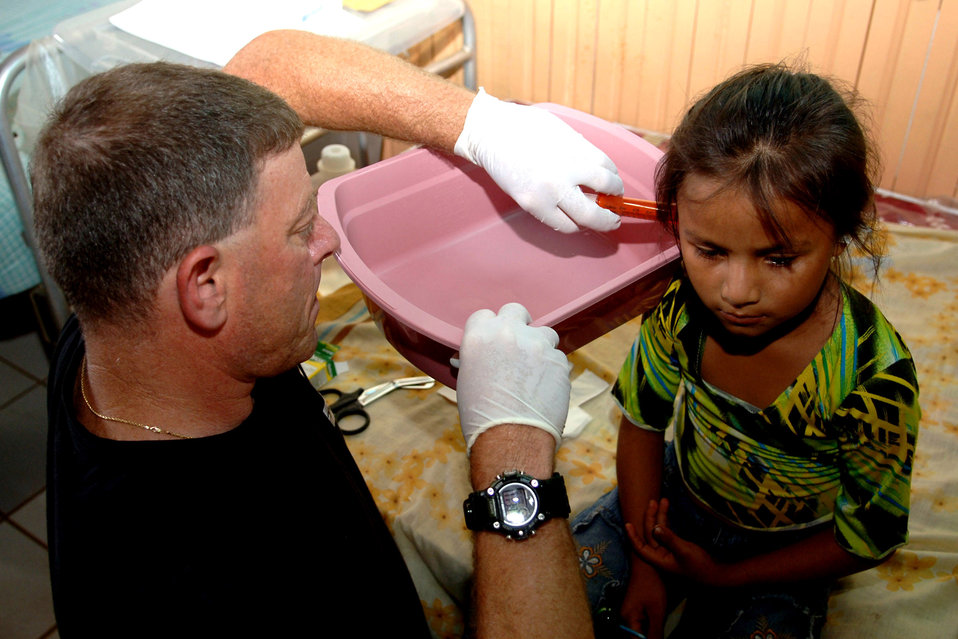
Air Force medics take medical mission to Bolivia

Tech. Sgt. Don Evans treats a 5-year old Bolivian girl during a Medical Readiness Training Exercise in Cobija, Bolivia. Sergeant Evans, assigned to the 152nd Medical Group, Reno Nev., was part of 30-member medical team in Bolivia treating underserved populations in the country.